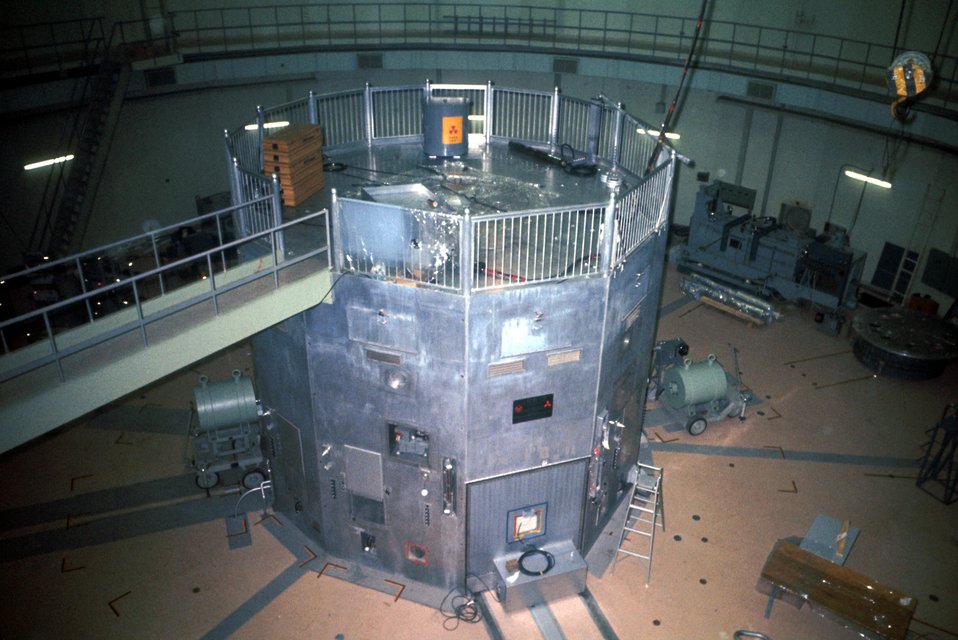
Japan Research Reactor #2. Atoms for Peace Reactor (overhead view). c. 1960